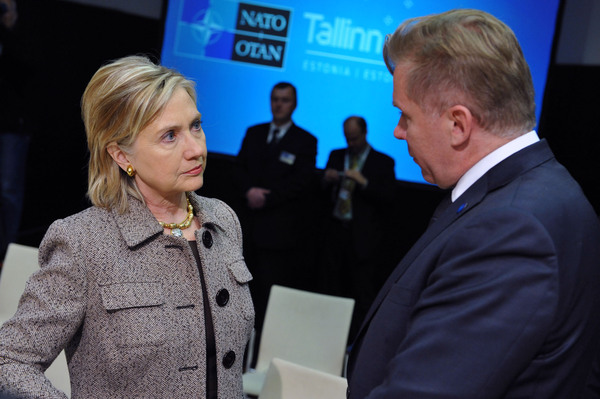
Secretary Clinton With Lithuanian Foreign Affairs Minister Azubalis

U.S. Secretary of State Hillary Rodham speaks with Lithuanian Foreign Affairs Minister Audronius Azubalis at the NATO meeting with non-NATO ISAF contributing nations, April 23, 2010, Tallinn, Estonia.